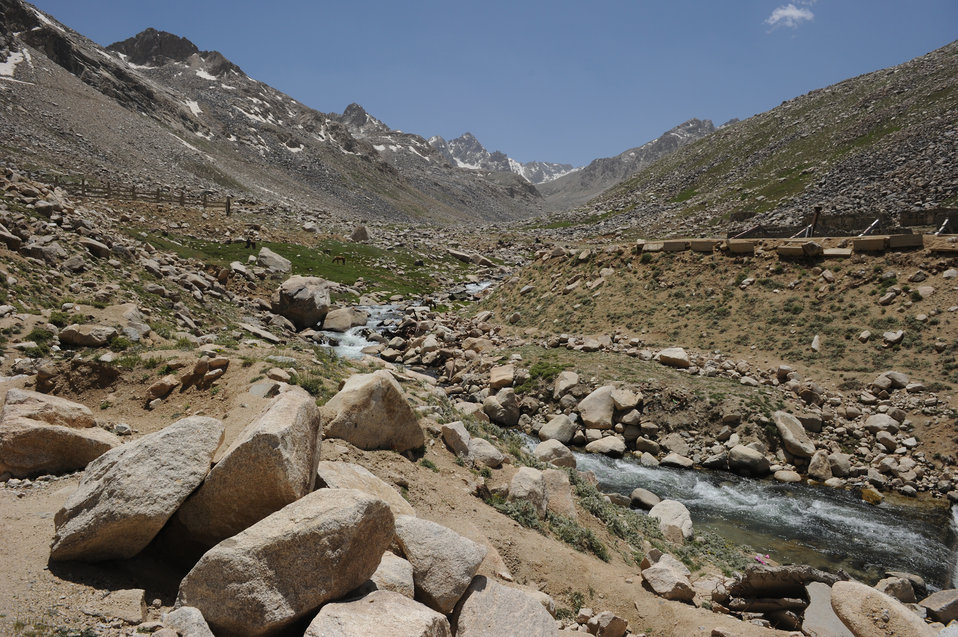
Near the North end of the Salang Tunnel on the border of Parwan and Baghlan Provinces, Afghanistan, on Wednesday, June 15, 2011. (S.K.Vemmer/Department of State)